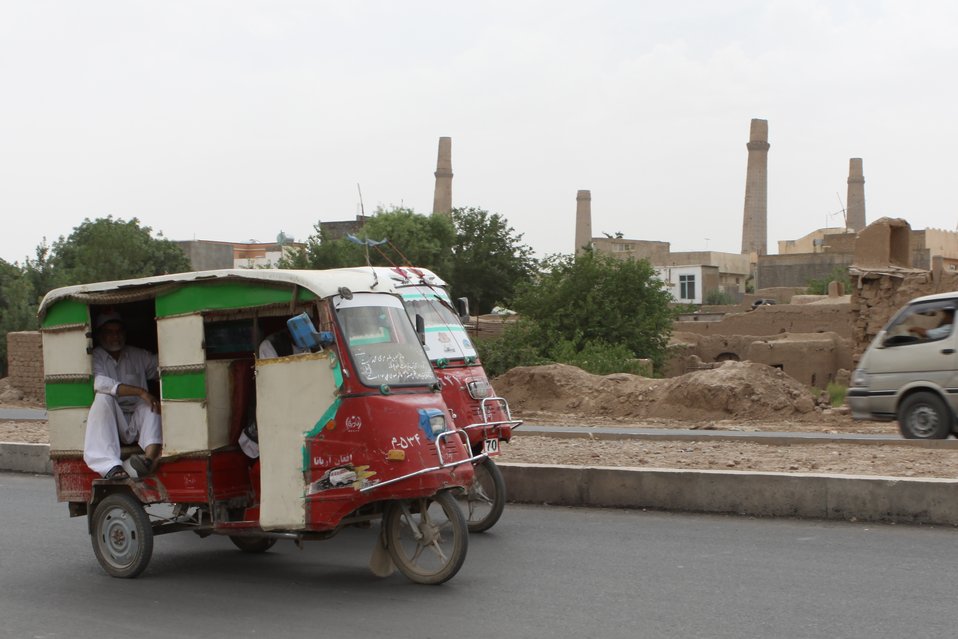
100525 Hirat Marble Conference 597